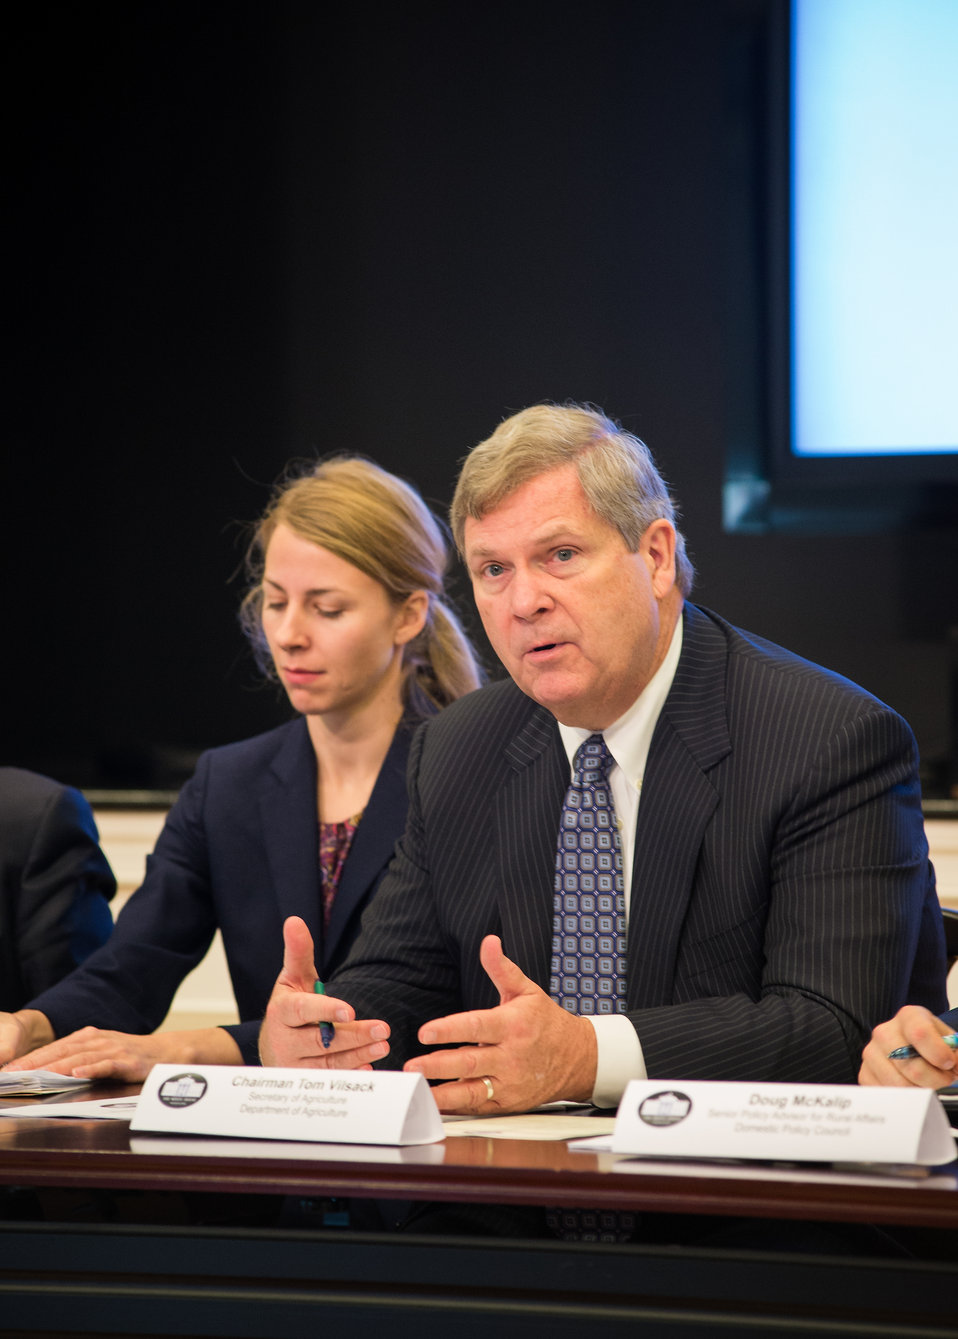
Agriculture Secretary Tom Vilsack and administration officials discuss the Farm Bill, Immigration Reform and White House Rural Council Investments and Policy actions at the Eisenhower Executive Office Building in Washington, D.C. on Thursday, Nov. 21, 2013. (Left of Secretary Vilsack is Secretary’s Special Assistant Tara Rice).